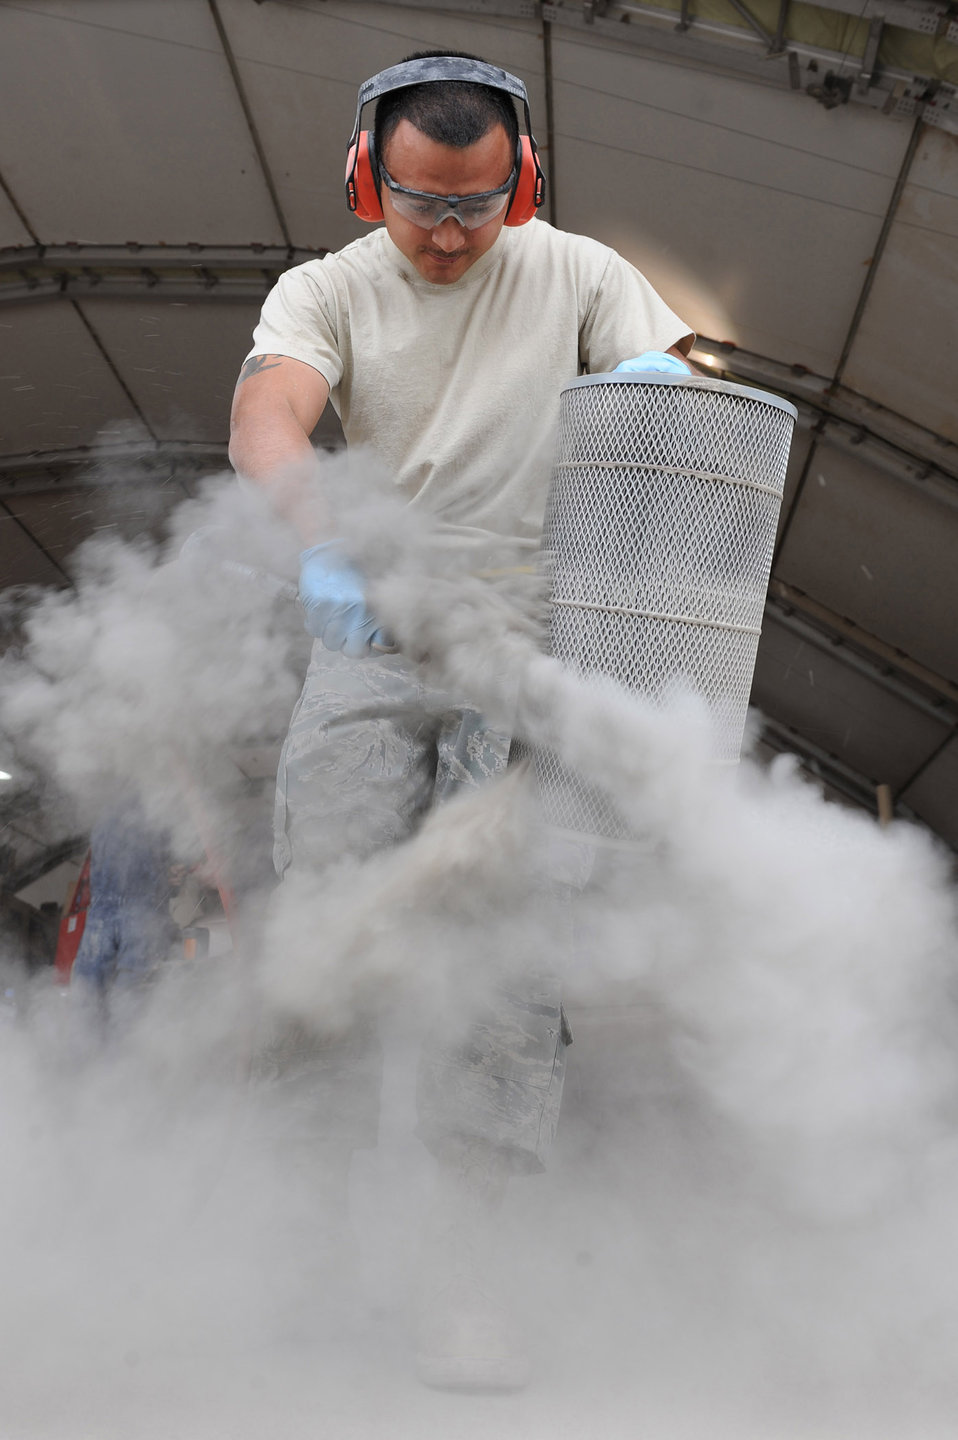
It’s a dirty job, but …

Senior Airman Sebero Quintero cleans an air filter with compressed air Oct. 28, 2010, at Kandahar Airfield, Afghanistan. Routine maintenance and servicing vehicles, such as cleaning air filters, can increase fuel efficiency. Airman Quintero, who is from Los Angles, is a vehicle maintenance journeyman with the 451st Expeditionary Logistics Squadron.